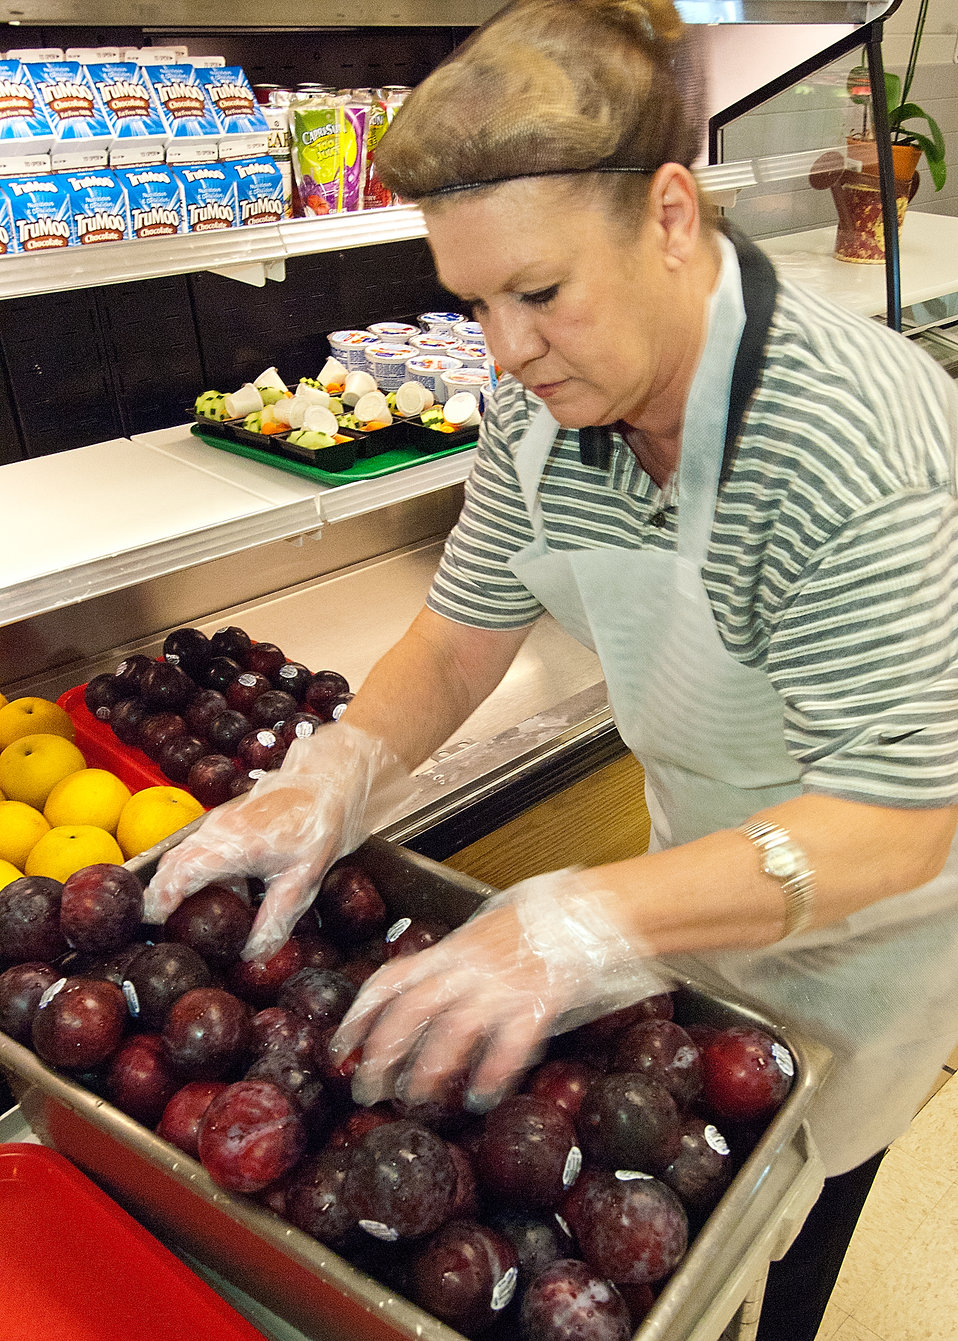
Judy Carter, Arlington Food Services arranges plums, fresh apples and Asian pears for through the National School, Breakfast Program for students at Washington-Lee High School in Arlington, Virginia, on Wednesday, October 19, 2011. The School Breakfast Program a federally assisted meal program administered by the United States Department of Agriculture, Food and Nutrition Service provides cash assistance to States to operate nonprofit breakfast programs in public, nonprofit private schools and residential child care institutions. The program is administered at the Federal level by USDA, FNS. State education agencies administer the SBP at the State level, and local school food authorities operate it in schools.